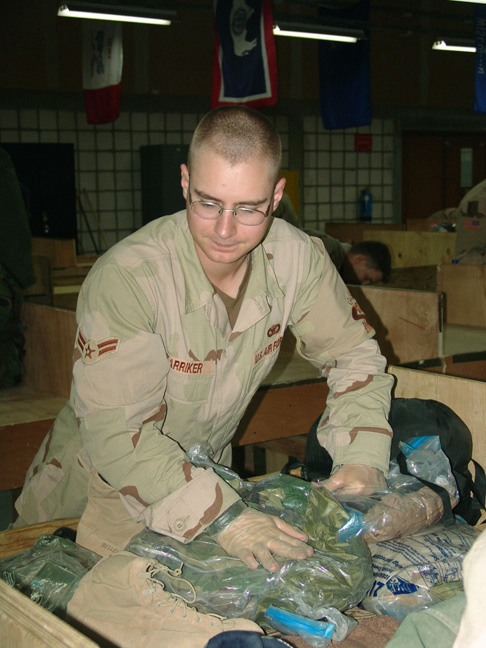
Security forces work as customs inspectors

SOUTHWEST ASIA -- Airman 1st Class Joshua Karriker checks a Soldier's bag before clearing him through customs. He and other 886th Expeditionary Security Forces Squadron customs inspectors check for prohibited items, such as agricultural products, war souvenirs and ammunition.